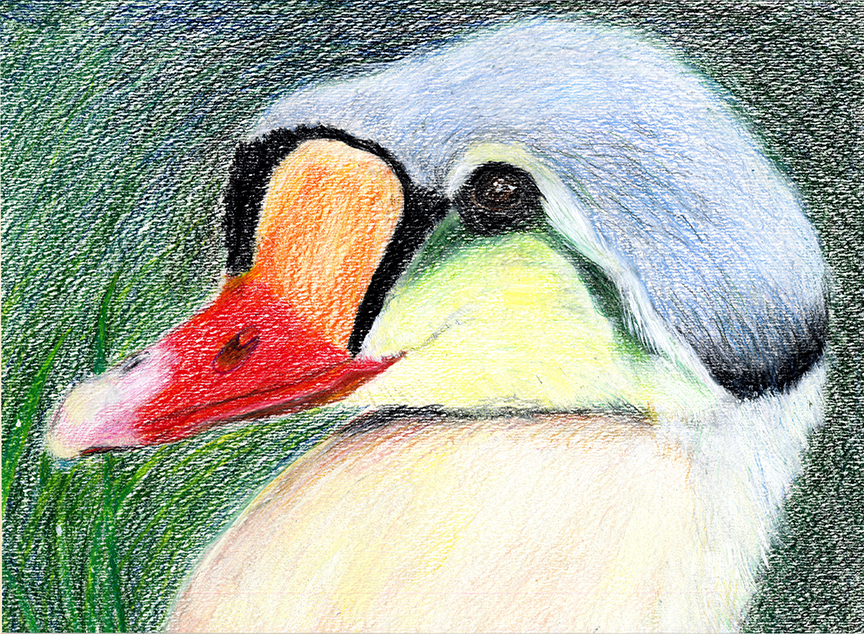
JRDuck2013DC

2013 Junior Duck Stamp Best of Show-District of Columbia